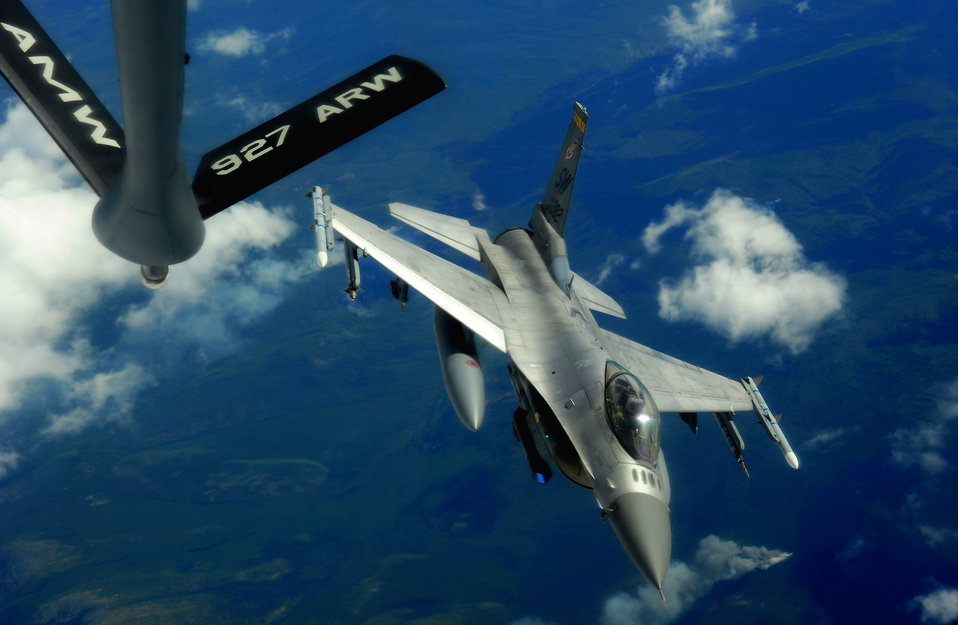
Gas and go...

An F-16 Fighting Falcon pulls away after refueling from a KC-135 Stratotanker over Eielson Air Force Base, Alaska, in support of exercise Red Flag-Alaska, June 15, 2010.